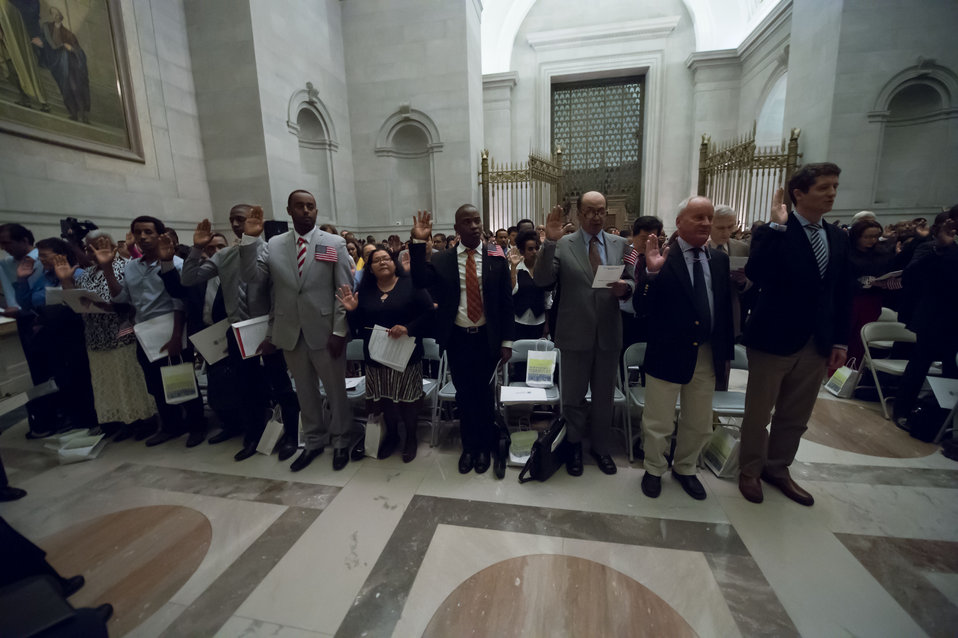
Constitution Day Naturalization Ceremony

Taking the oath of citizenship.